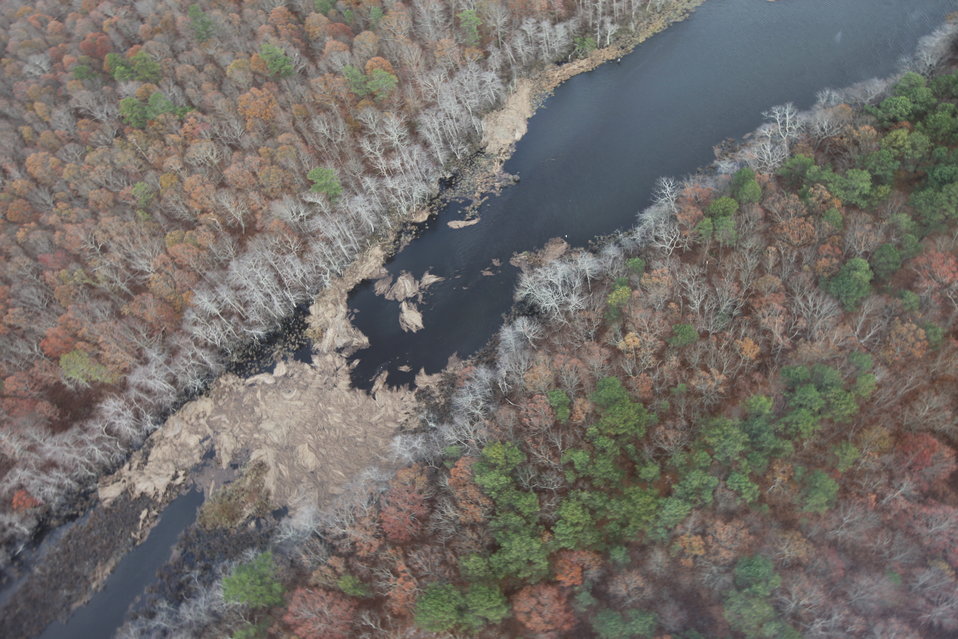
Aerial view of Wertheim National Wildlife Refuge after Hurricane Sandy (NY)

Vegetation and debris in the water in the aftermath of storm Sandy at the Wertheim National Wildlife Refuge on Long Island, New York.